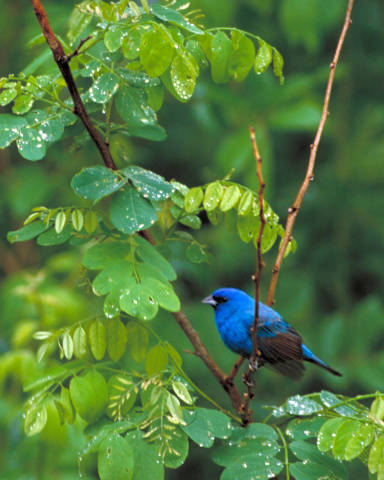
indigo bunting